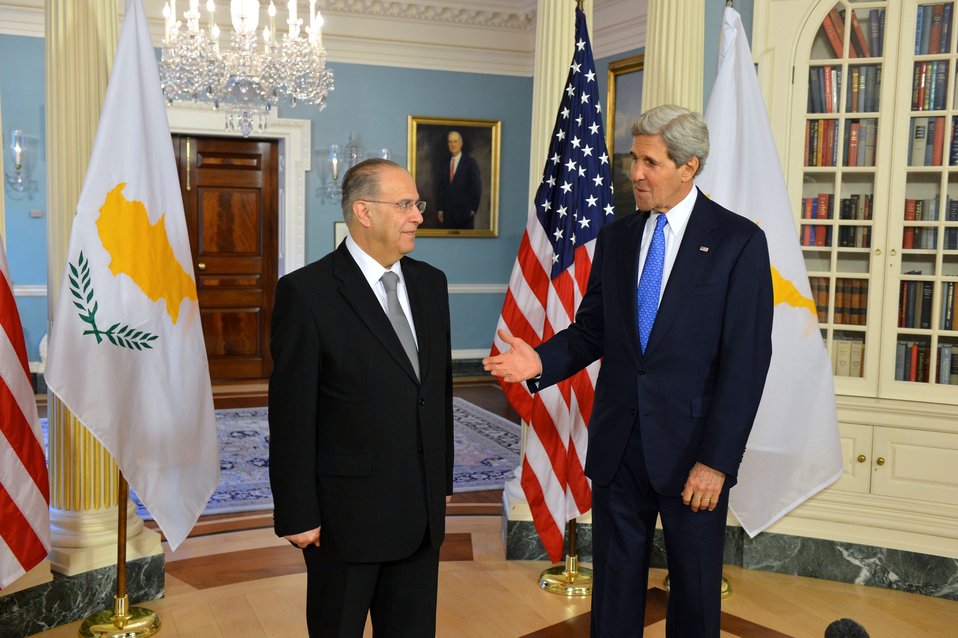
Secretary Kerry and Cypriot Foreign Minister Kasoulides Address Reporters

U.S. Secretary of State John Kerry and Cypriot Foreign Minister Ioannis Kasoulides address reporters at the U.S. Department of State in Washington, D.C., on May 13, 2014.